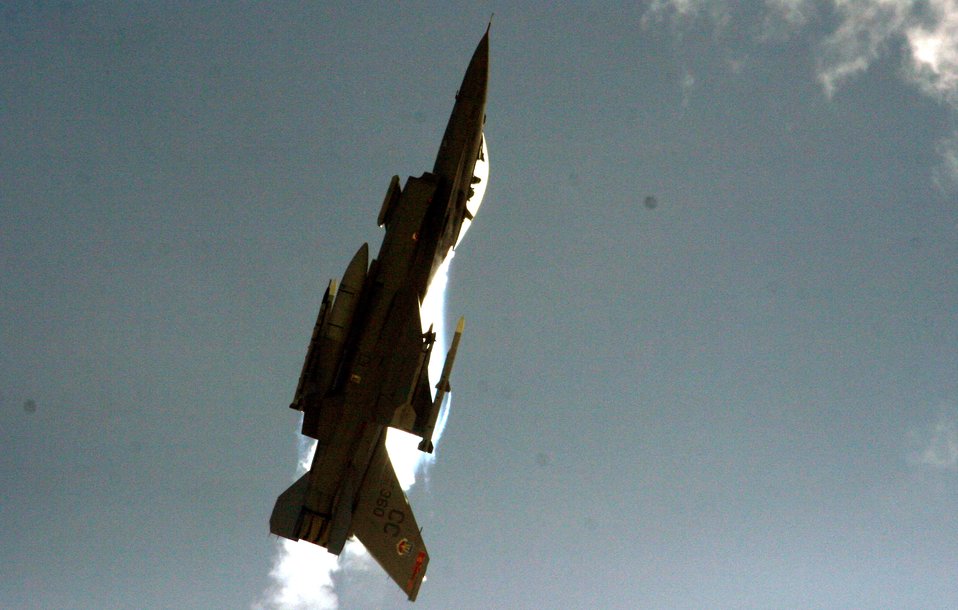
Aerial intercept training prepares warfighters

An F-16 Fighting Falcon demonstrates its range of maneuverability during an aerial intercept exercise Sept. 24 at Andersen Air Force Base, Guam. The F-16 C/D model is capable of withstanding up to nine Gs, or nine times the force of gravity, during combat maneuvers.